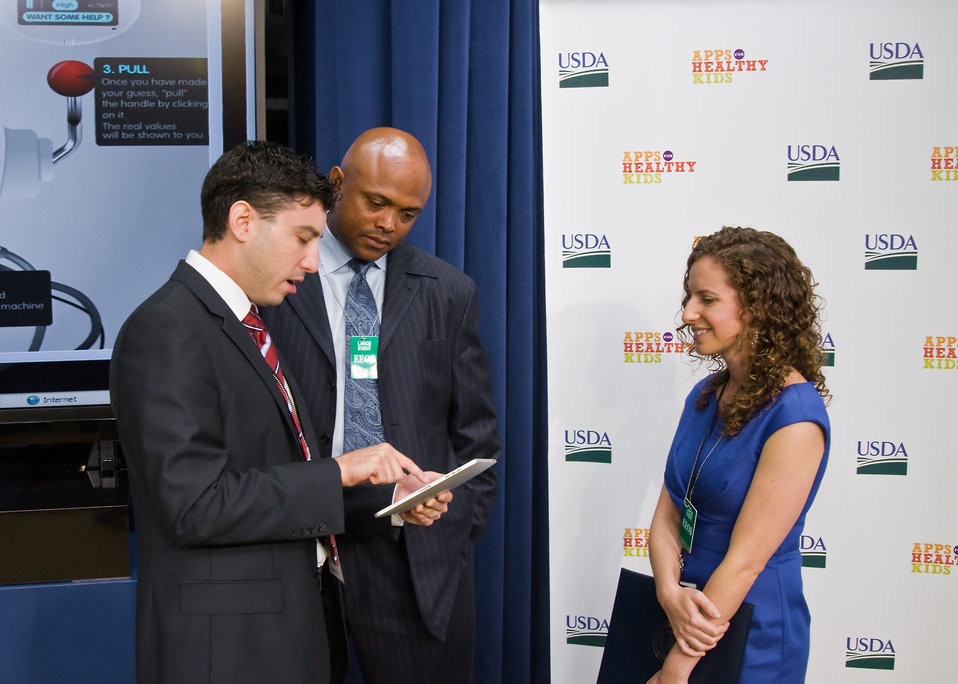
Winners of the Popular Choice Award for the game 'Food Buster,' in the Apps for Healthy Kids competition Aaron Coleman and Jesica Oratowski-Coleman, San Diego, California explain how the game works to former Washington Redskins Running Back Brian Mitchell at the White House, on Wednesday, September 29, 2010. The Apps for Healthy Kids competition is part of First Lady Michelle Obama’s Let’s Move campaign to end childhood obesity within a generation. The competition challenges software developers, game designers, students and other innovators to develop fun and engaging software tools and games to urge children, especially “tweens” (children ages 9-12) – directly or through their parents – to eat better and be more physically active. 'Food Buster,' is a game show that asks you to carefully stack food items that do not break our scale. For each round, you will try to find foods with the fewest calories, least added sugar and least amounts of saturated fat. The fewer the calories, the more points you will get. USDA Photo 10di1506-172 by Bob Nichols.